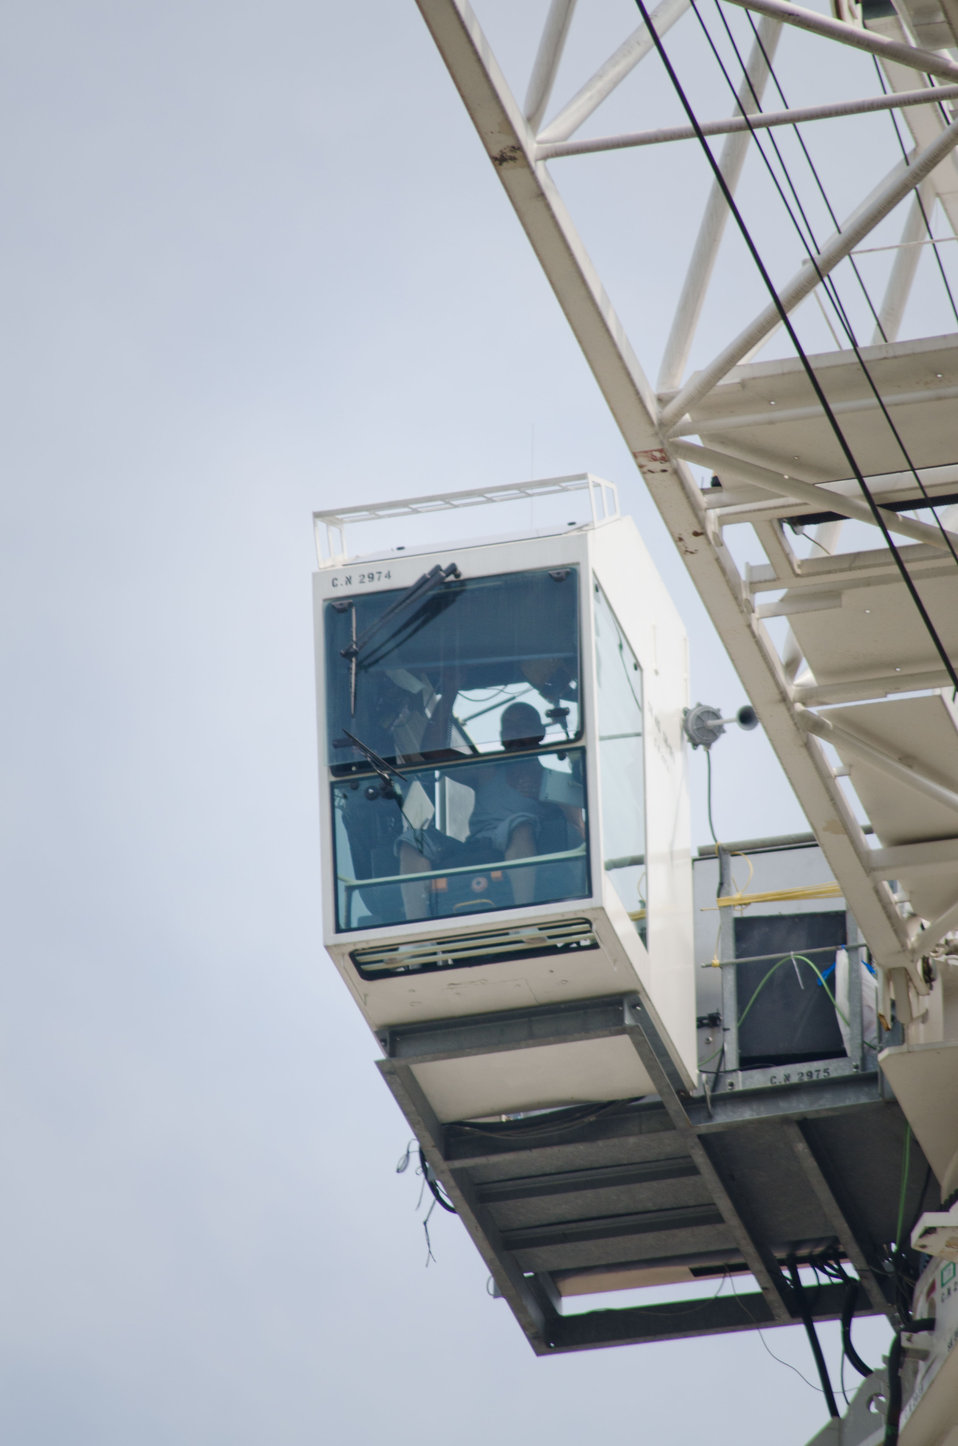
A crane operator maneuvers a load of gravel over the $25 million expansion project at University of Pikeville Kentucky College of Osteopathic Medicine (UP-KYCOM), Pikeville, KY, on Tuesday, July 12, 2011.